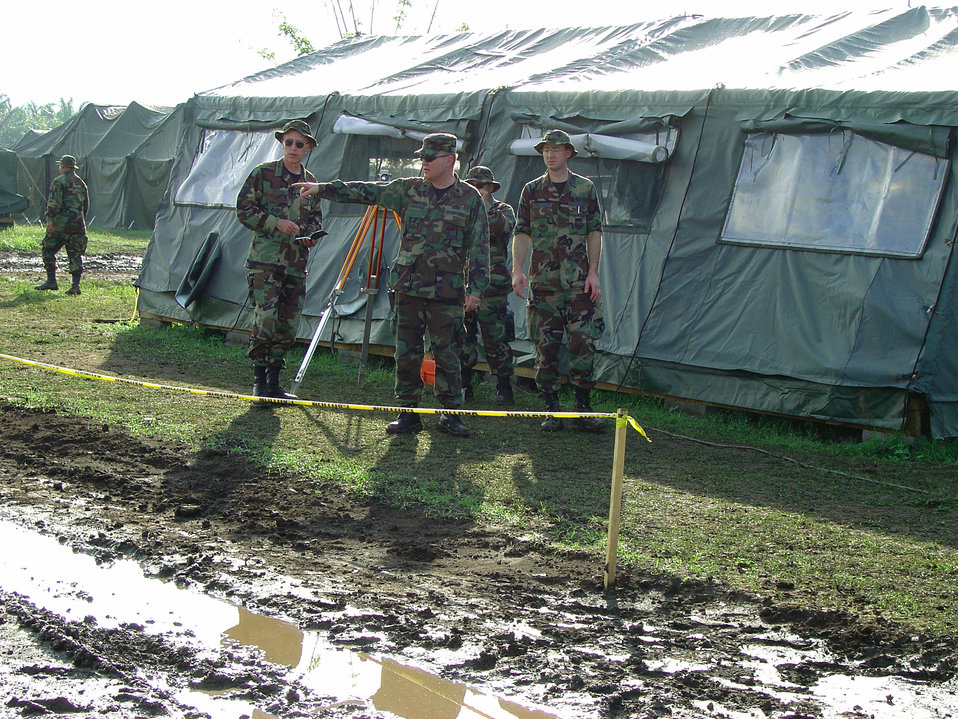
Experience in Honduras

SABA, Honduras -- Amdist the mud, Lt. Col. Randy Hoscheid shows (from left) Master Sgts. David Nelson and Jose Gonzalez-Rocha, and Capt. Steve Christoff where the shower and latrine trailers are to be set. The Airmen from the 934th Civil Engineer Squadron were here to participate in an exercise where they made improvements to the base camp and helped with projects in local villages. Colonel Hoscheid is the 934th CES commander.